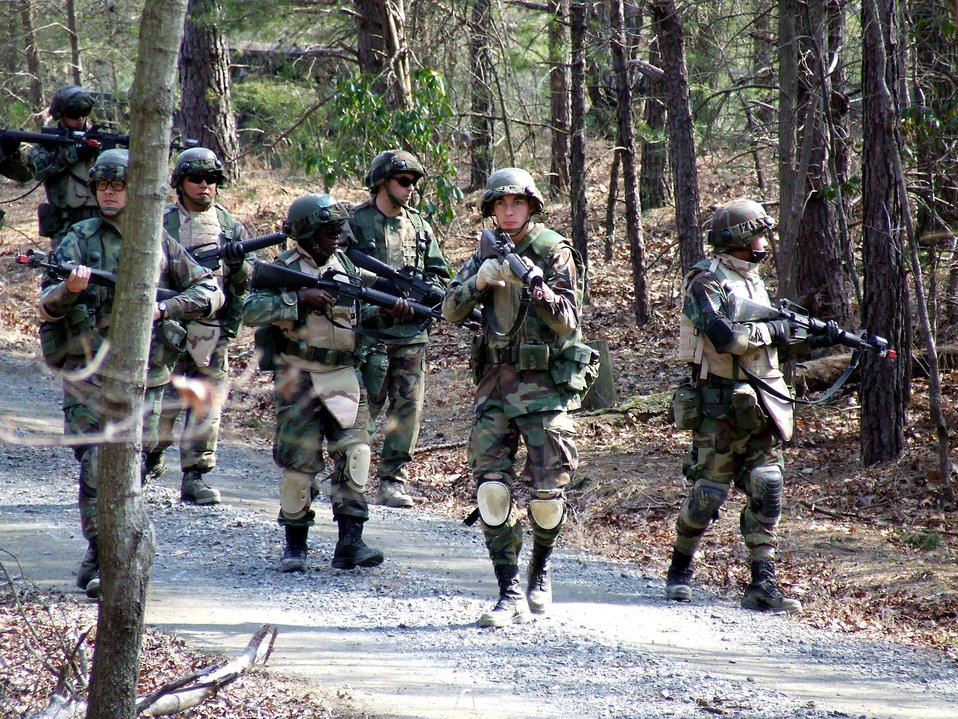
Advanced Contingency Skills Training

Airmen practice squad and fire team manuevers as part of a tactics and patrolling class for the Advanced Contingency Skills Training Course March 14 on a range on Fort Dix, N.J. The course, made up of more than 300 students, prepares Airmen for upcoming deployments through teaching areas such as deployment tactics, patrolling, convoy operations and self defense. The course is taught by the U.S. Air Force Expeditionary Center's 421st Combat Training Squadron.